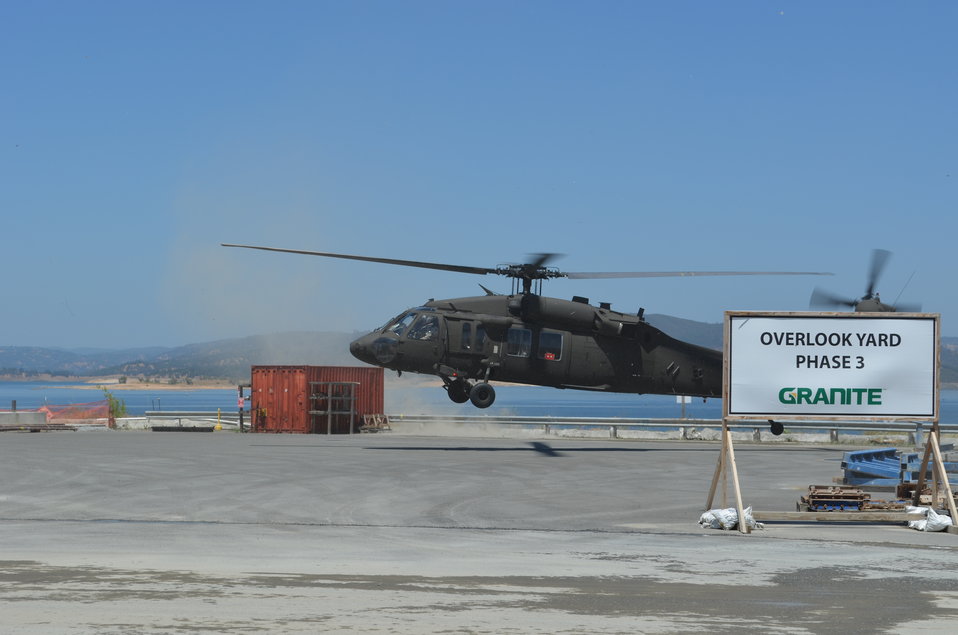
Assistant Sec. of the Army for Civil Works visits JFP

Jo-Ellen Darcy, Assistant Secretary of the Army for Civil Works, and other U.S. Army Corps of Engineers leaders arrive by helicopter to tour the Folsom Dam auxiliary spillway project June 3, 2014, in Folsom, Calif., as part of her visit to Corps infrastructure projects in Northern California. The Corps, together with the U.S. Bureau of Reclamation and state and local partners, is building the spillway to reduce flood risk throughout the Sacramento region.